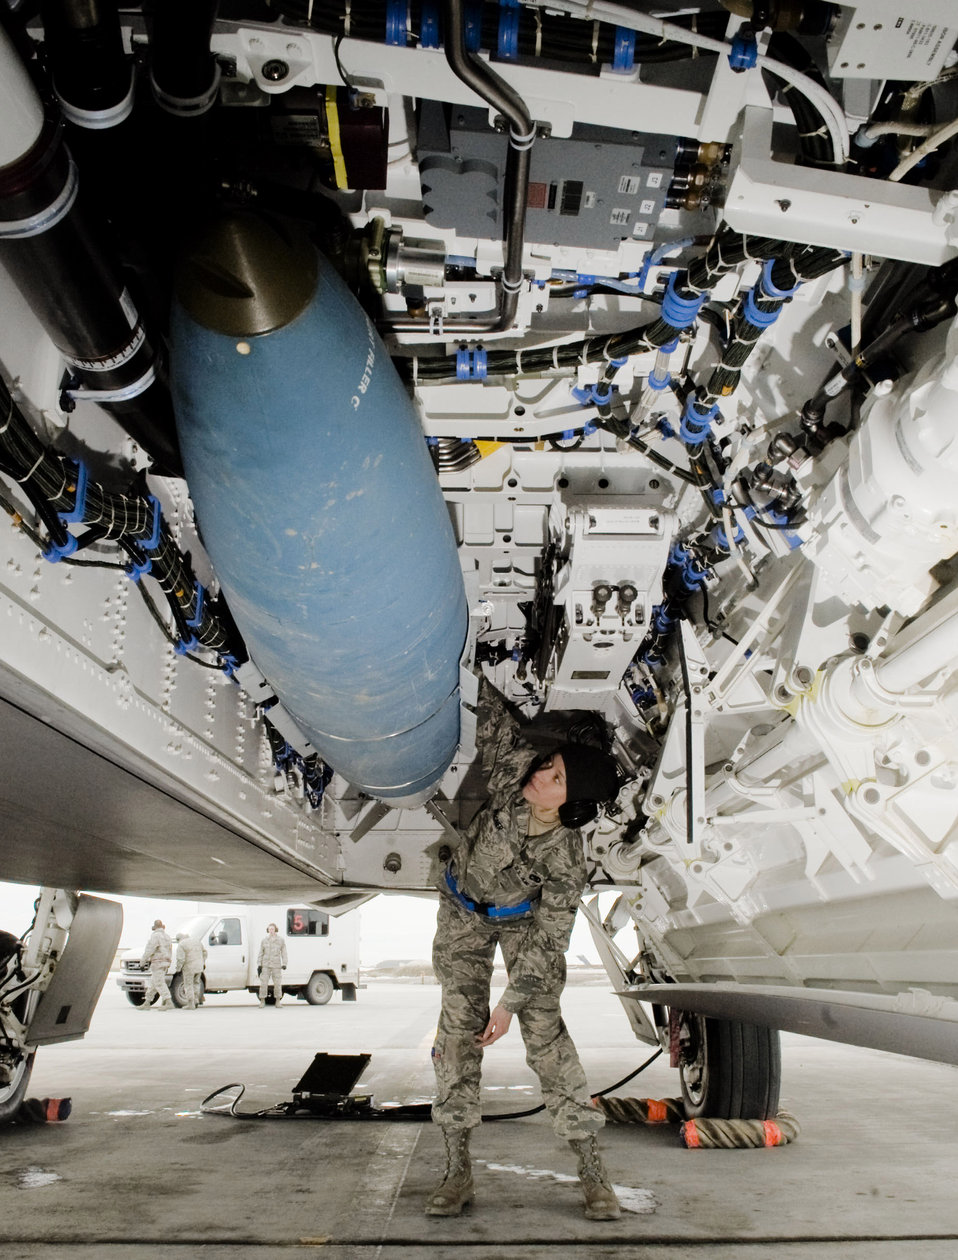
Bombs on target

Airman 1st Class Amber Wagner inspects a Joint Direct Attack Munitions after it's loaded onto an F-22 Raptor April 14 at Elmendorf Air Force Base, Alaska. Airman Wagner, assigned to the 525th Aircraft Maintenance Unit, ensured the JDAM dropped by the 525th Fighter Squadron was successful.